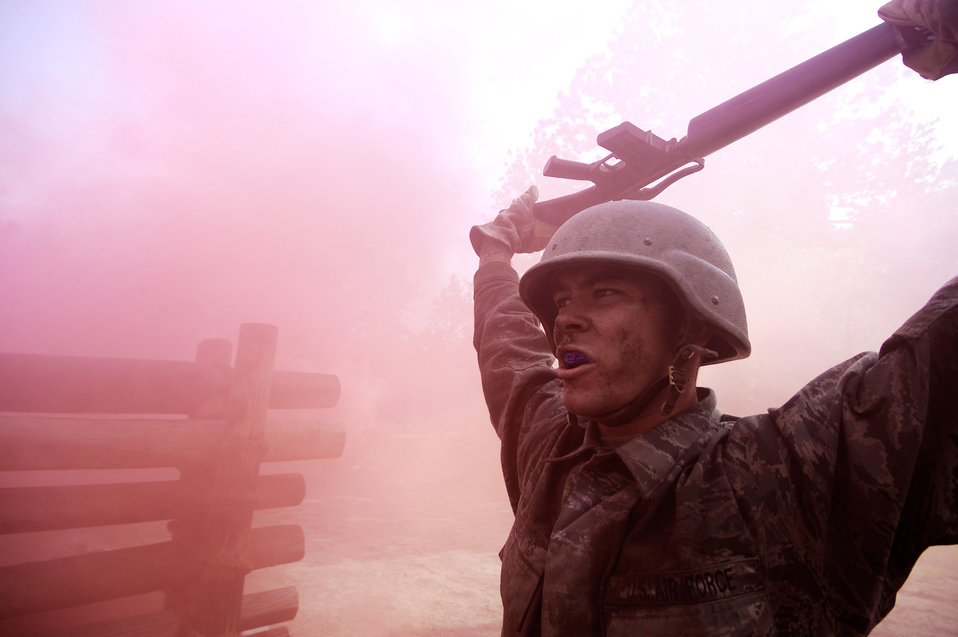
Academy basic field training at Jacks Valley

Air Force Academy Basic Cadet Ryan McKilligan keeps his rifle high July 21 at the Jacks Valley Assault Course near Colorado Springs, Colo. The field training portion of basic training started July 13.